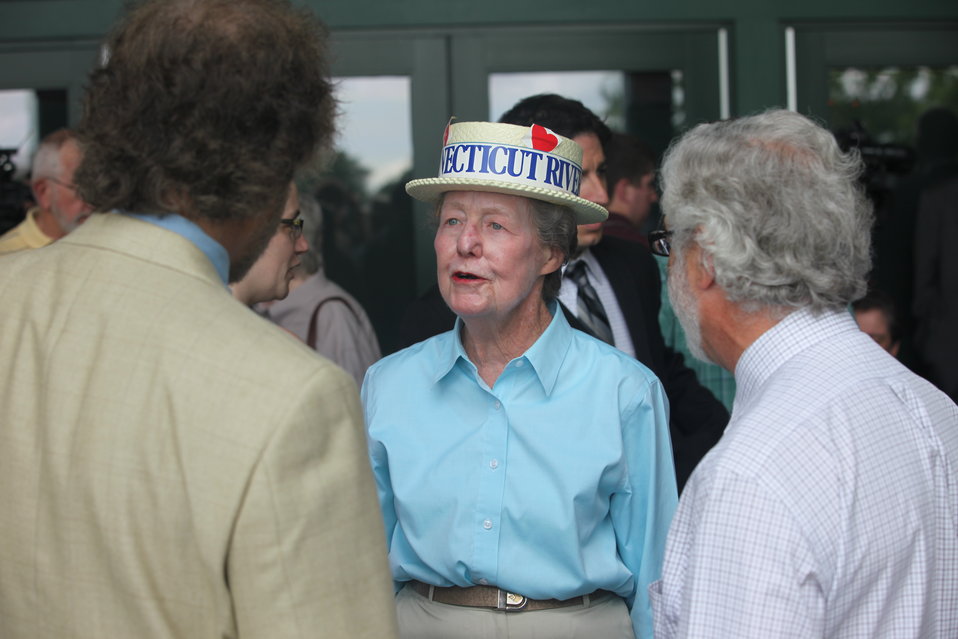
Festive Ct. River hat

An event attendee with a very festive Connecticut River hat!